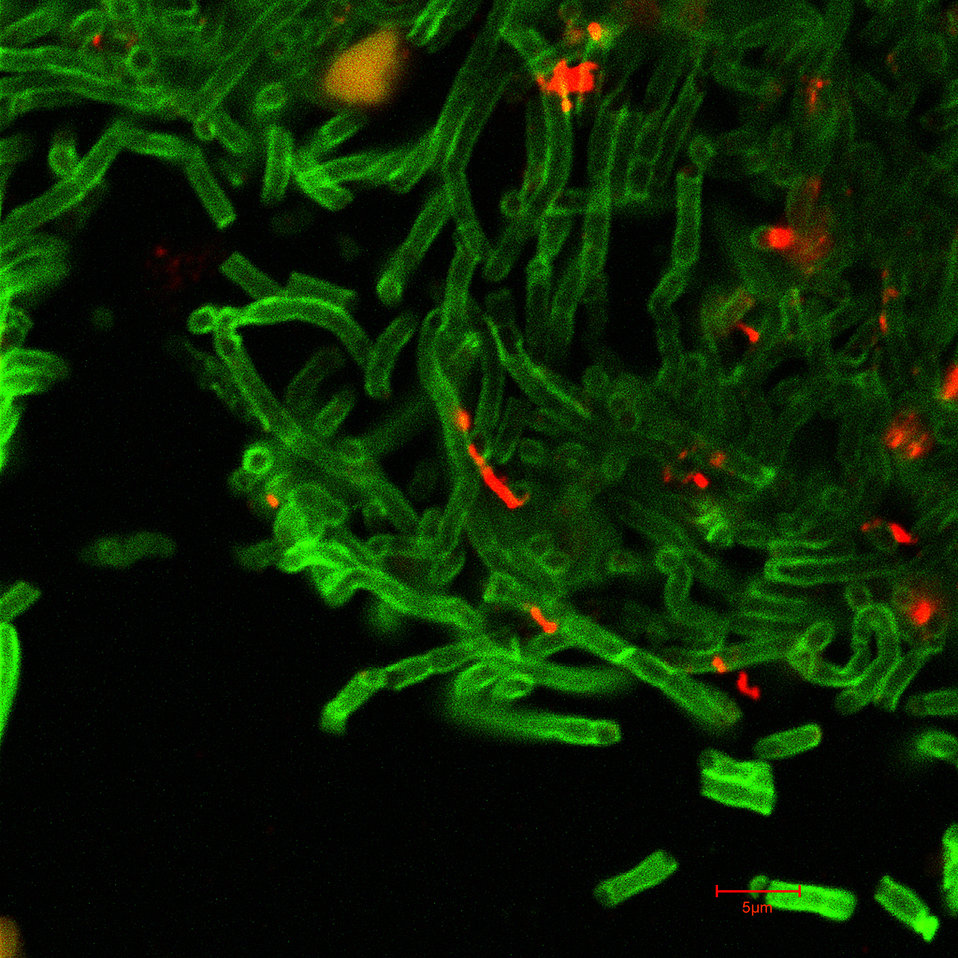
Confocal micrograph of Bacillus anthracis.